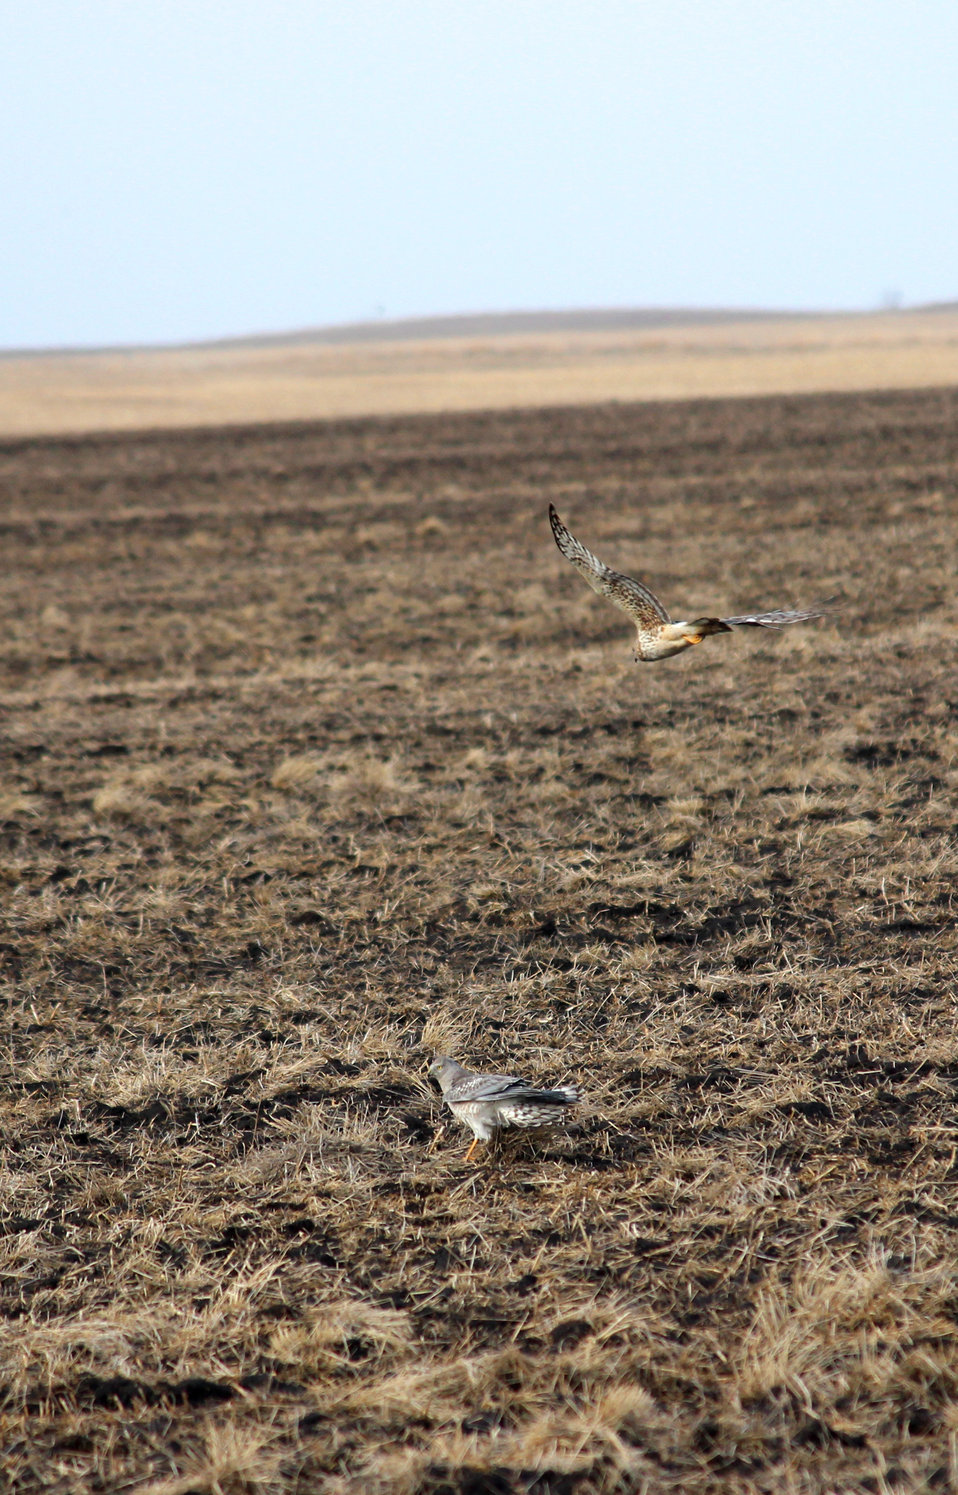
Northern Harriers have very distinguishable genders. Males are grey, and females are brown. Can you tell which is which in this photo?